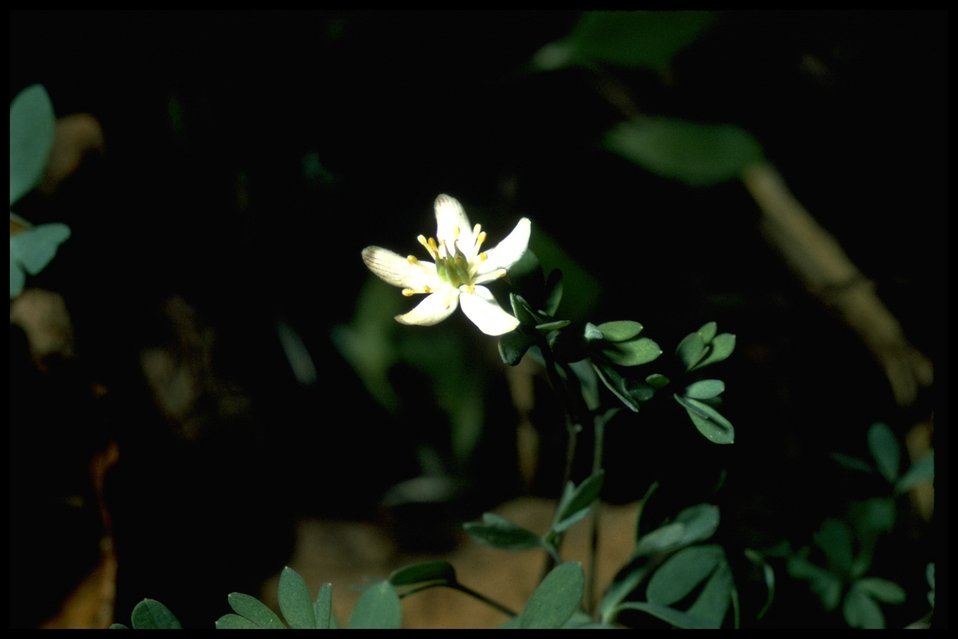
Medium shot of dwarf isopyrum (Isopyrum stipitatum).